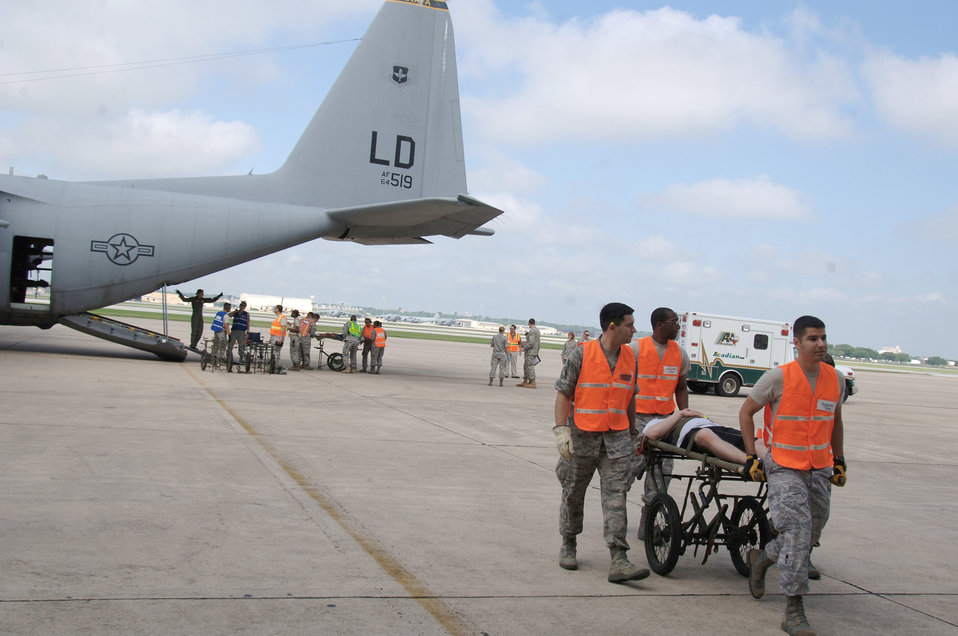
Exercise tests response

Members of the 59th Medical Wing manpower team transport an exercise patient to be triaged during a National Disaster Medical System exercise May 27, 2010, at Port San Antonio, Texas. Forty volunteers simulated injured patients who had received medical stabilization en route to Port San Antonio and then were transported to area hospitals according to injury and availability of bed spaces.